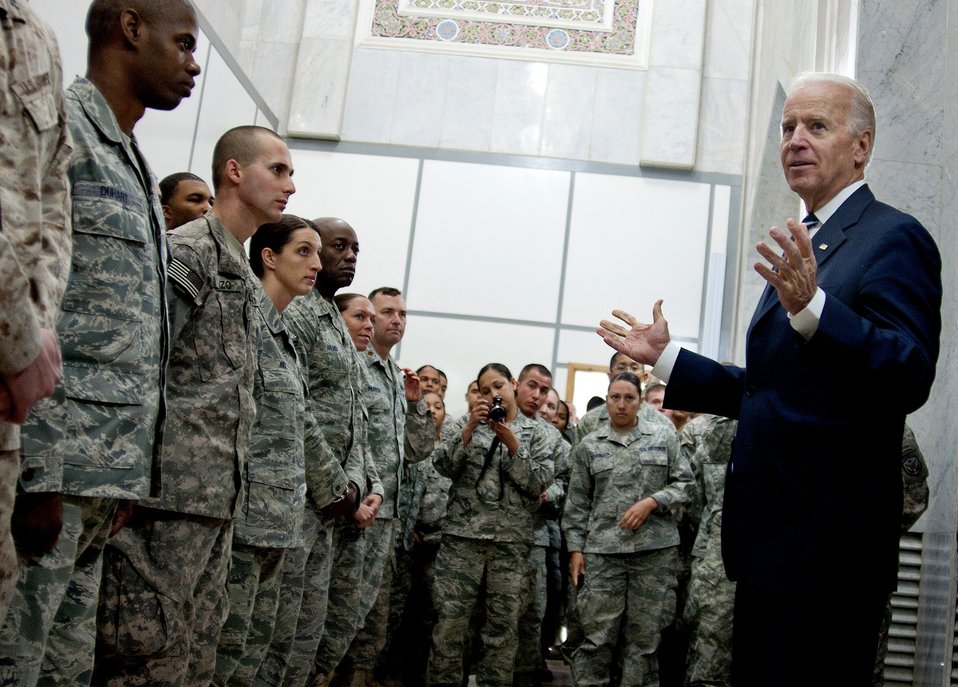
Biden, al-Maliki honor troops' sacrifices during Day of Commitment Ceremony

U.S. Vice President Joe Biden takes the time to talk to more than a hundred Airmen and Soldiers after the Government of Iraq Day of Commitment Ceremony in the Al Faw Palace at Victory Base Complex, Iraq, Dec. 1, 2011. Biden shook hands, took pictures and provided each service member a coin.